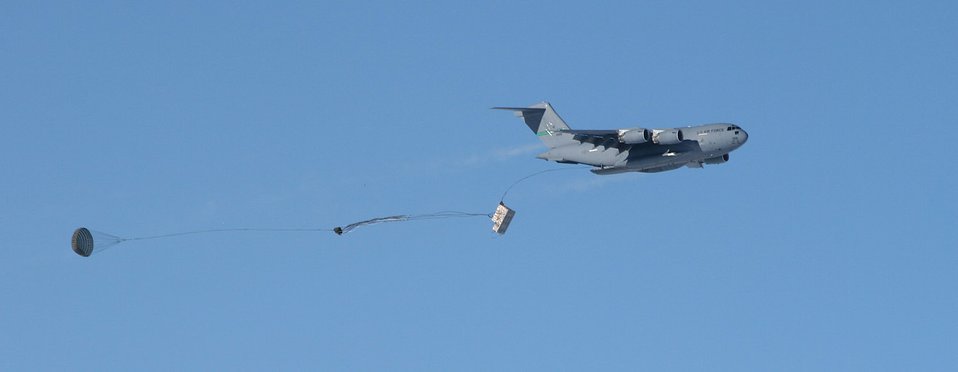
C-17 makes its first South Pole airdrop

A C-17 Globemaster III drops pallets of cargo Dec. 20 during the first C-17 airdrop to the South Pole. Airmen from the 62nd and 446th Airlift Wings at McChord Air Force Base, Wash., delivered 70 tons of supplies to the National Science Foundation team wintering there. The mission was a